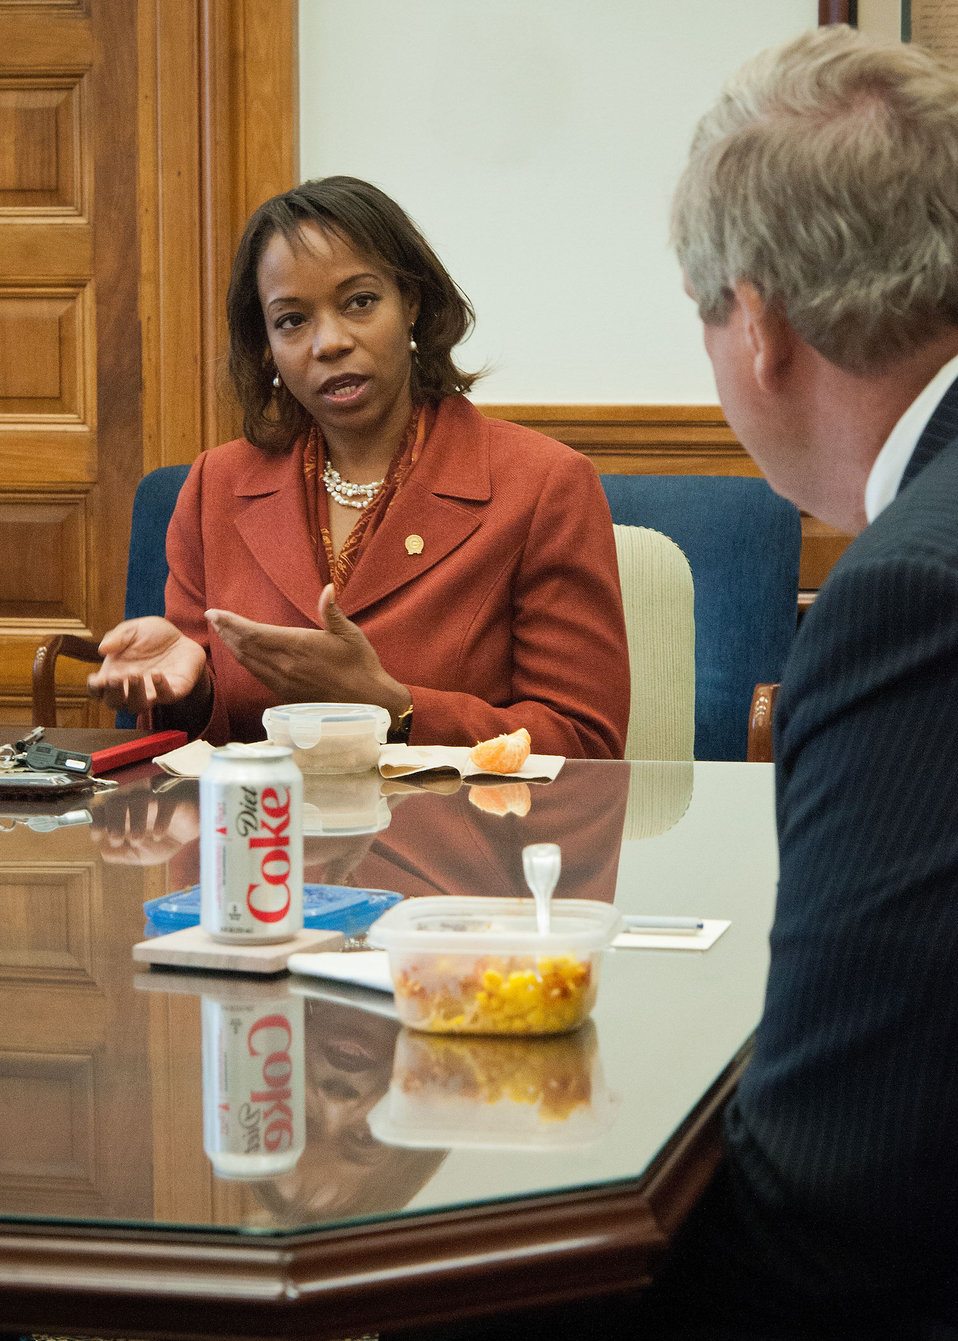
U.S. Department of Agriculture (USDA) Chief Privacy Office Ravoyne Payton had the opportunity with other USDA employees to discuss the roles they play within the Department at a Brown Bag Lunch held with Agriculture Secretary Tom Vilsack in Washington, D.C. on Wednesday, Sept. 26, 2012. Secretary Vilsack holds the occasional Brown Bag Lunches to gain information and knowledge to assist in the administration of the affairs and programs of the Department, and to thank the employees for their diligent work to the Department and as public servants.